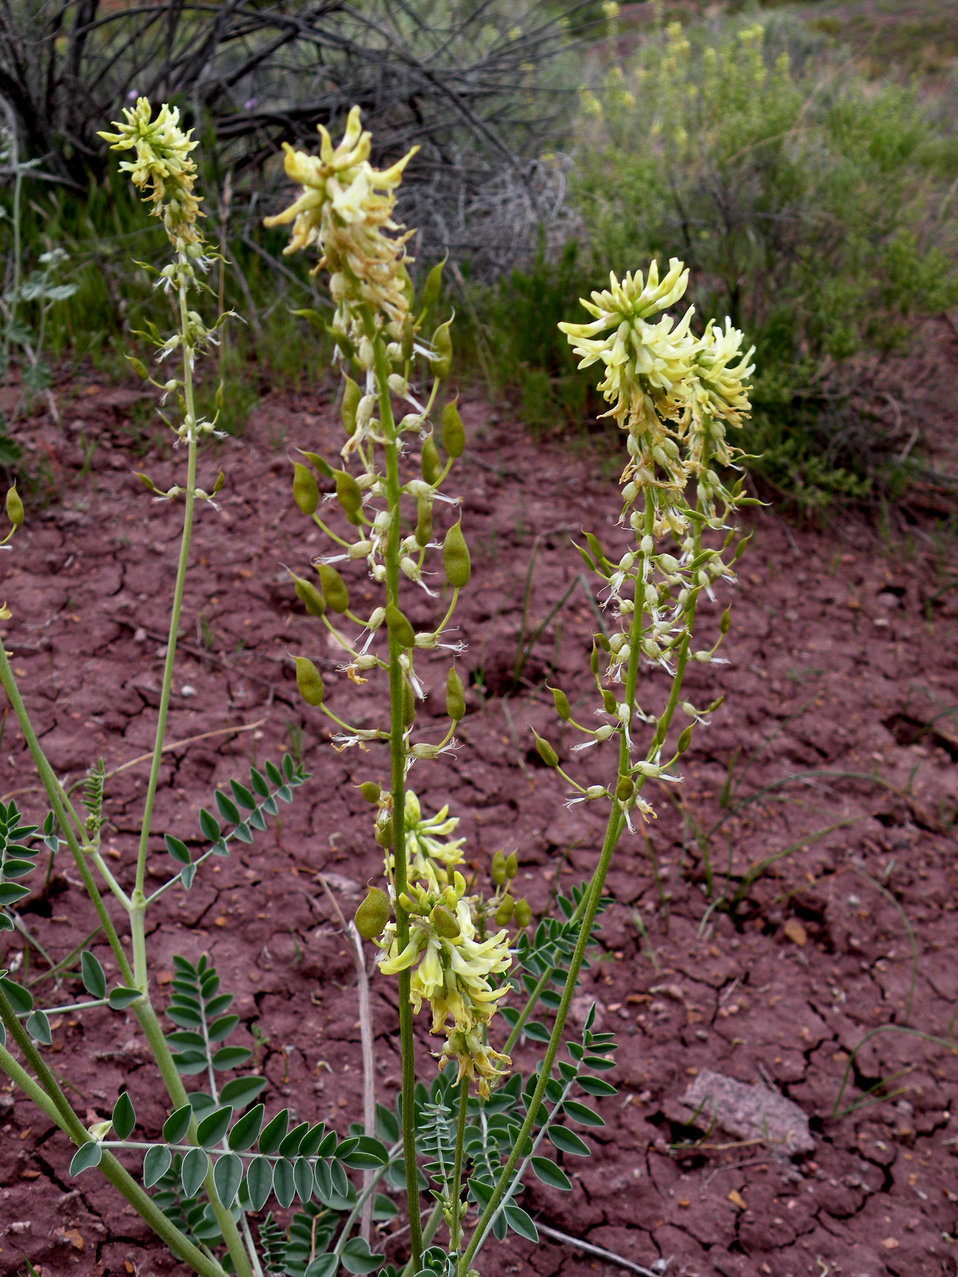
Shivwits milkvetch (Astragalus ampullarioides)

Shivwits milkvetch is a highly endemic perennial herb only known from a few populations in Washington County in southwestern Utah. It is restricted to soils derived from the Chinle Formation. It was listed endangered in 2001.